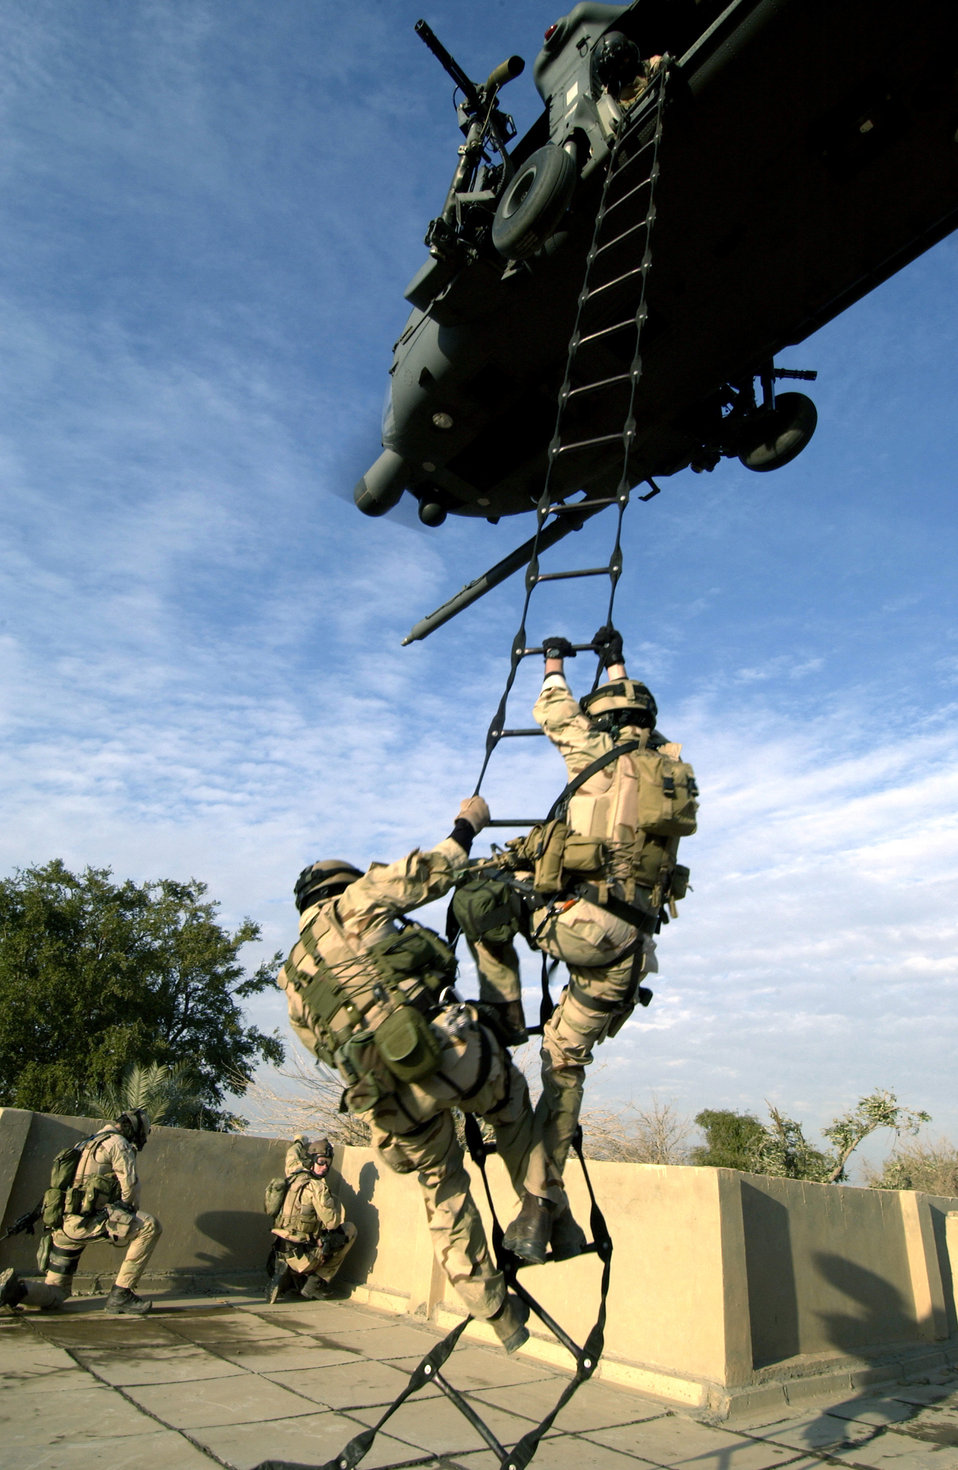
Career fields meld expertise in recovery missions

Air Force pararescuemen are extracted from an abandoned housing site by an HH-60G Pave Hawk in December 2004 in Baghdad, Iraq. The Airmen were assigned to the 64th Expeditionary Rescue Squadron.